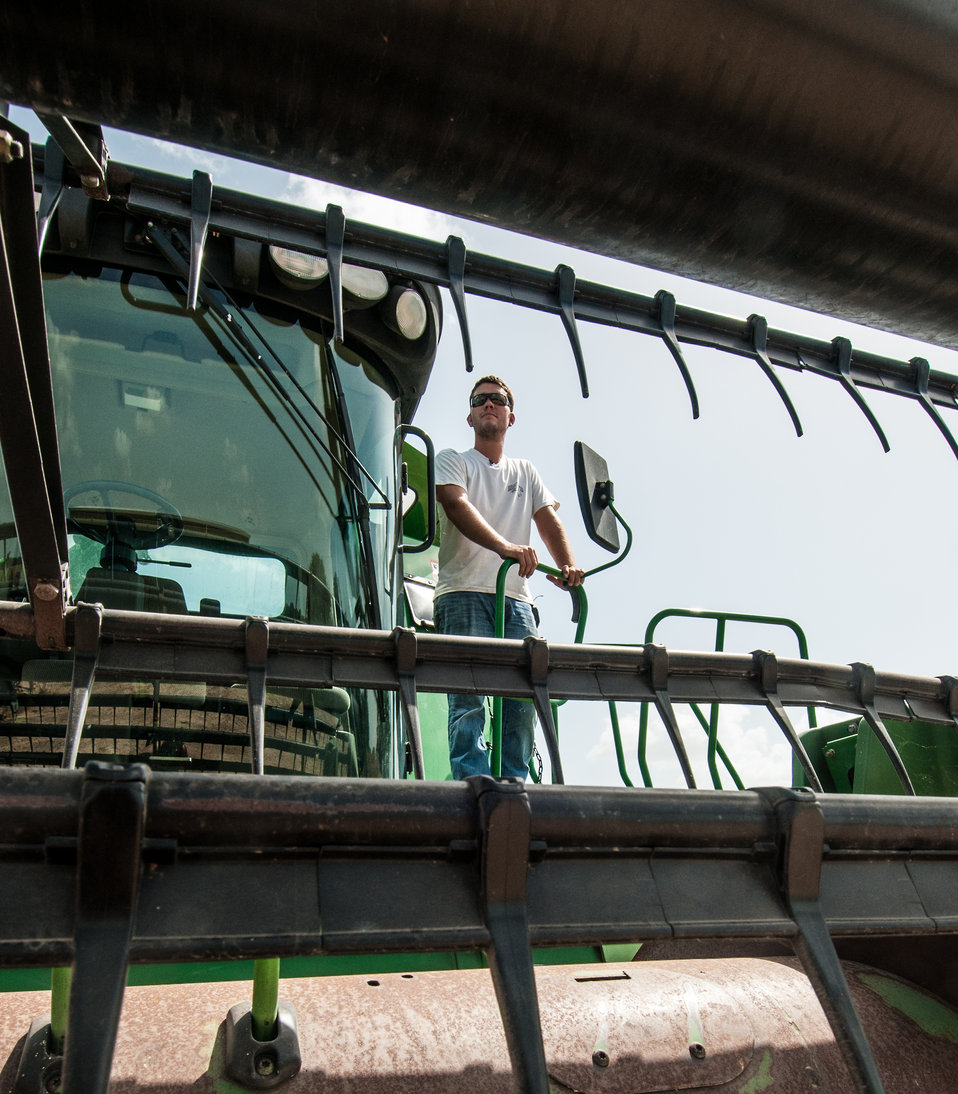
Philip Marek on one of the family combines at his father's farm (T and S Marek Farms) in Wharton County, TX, on Jun. 20, 2013. Philip Marek has been an independent farm since 2010, starting with 210 acres. Marek and his cousin Josh Marek were able to use a U.S. Department of Agriculture (USDA) Farm Services Agency (FSA) small and new farmer and rancher loan programs provided them the ability to handle initial business start-up and equipment purchase.